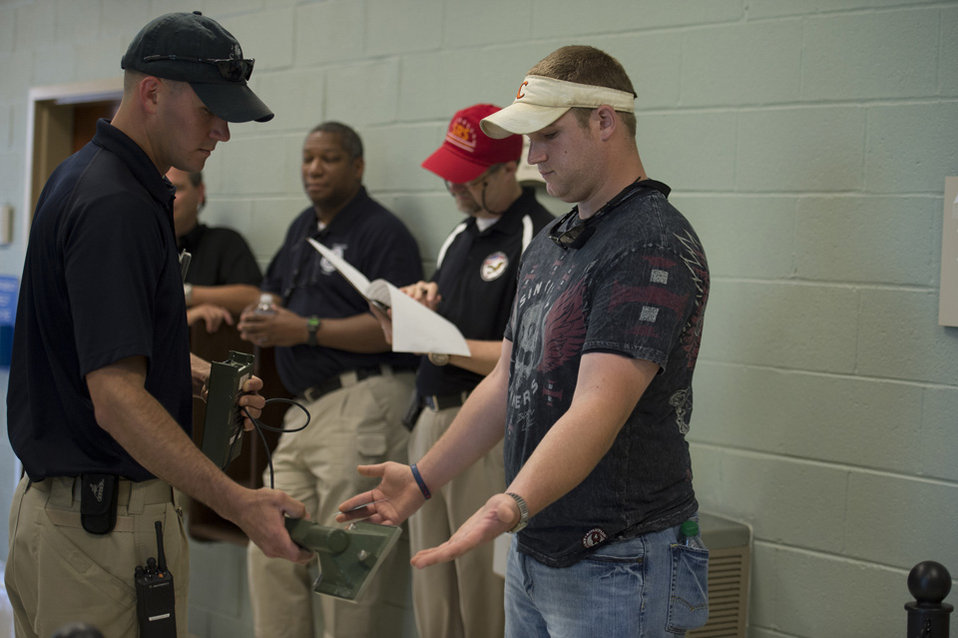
EXPERTS TESTS AGENCIES’ SKILLS AT RADIOLOGICAL DETECTION AND CONTROL

Team members screen “concert-goers” at Aiken Technical College, as exercise organizers/evaluators from SRNL observe (Aiken Technical College photo).

It was all part of an exercise conducted by the U.S. Department of Energy’s Savannah River National Laboratory (SRNL) on behalf of the Department of Homeland Security’s Domestic Nuclear Detection Office (DNDO). The goal was to challenge state and local agencies’ abilities to protect the public by detecting radioactive materials and responding appropriately in a variety of controlled, but realistic, scenarios.